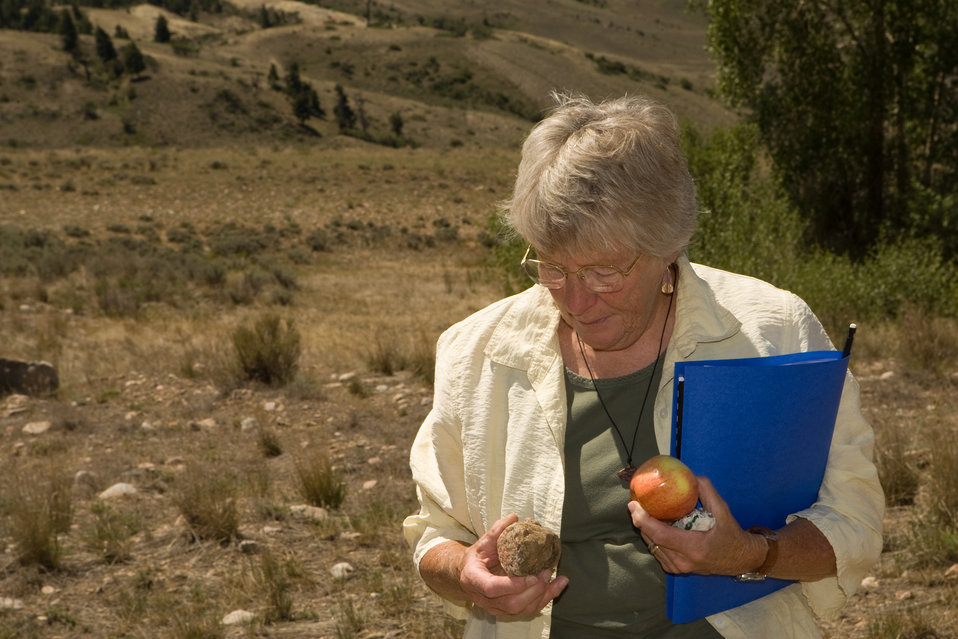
Colorado Rare Plant Conservation Initiative

The Colorado Rare Plant Conservation Initiative (RPCI) is a partnership of 23 statewide and regional agencies, private organizations, and academic institutions working to conserve 121 rare plants in Colorado. As part of these efforts the group developed the Colorado Rare Plant Conservation Strategy, developed Best Management Practices to reduce energy development impacts, addressed climate change, and developed focused strategies for the conservation of individual species at eight priority landscapes. The group has also worked to coordinate volunteer efforts for plant conservation across the state.